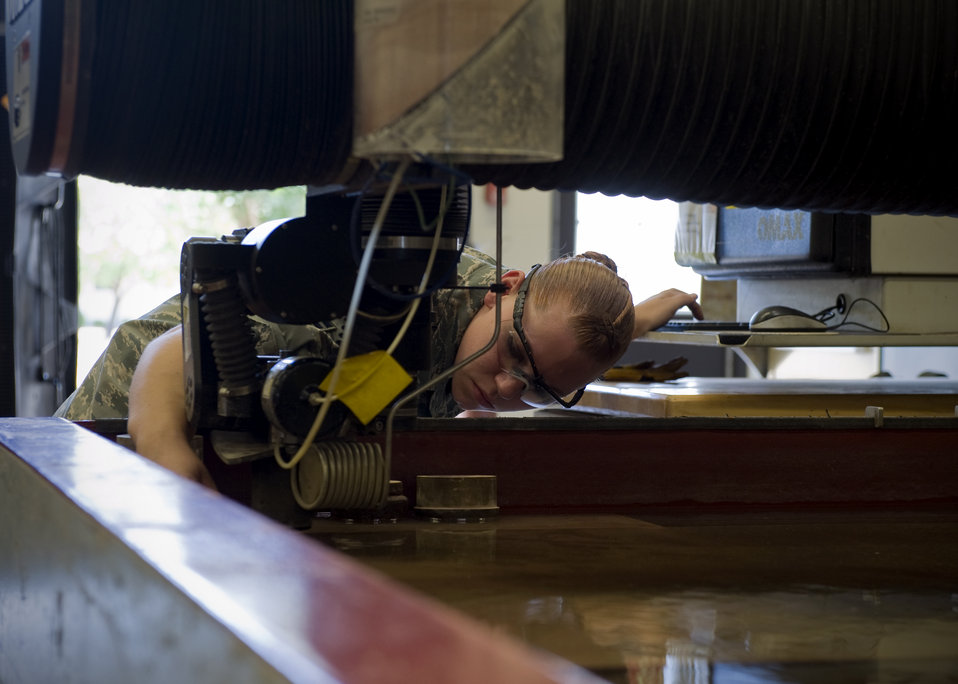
Heavy Metal Airman

Airman 1st Class Brooke Goosen, 7th Equipment Maintenance Squadron, positions an abrasive nozzle onto a sheet of metal Aug. 14, 2012, at Dyess Air Force Base, Texas. The cut metal will be welded onto a Y-stand used to hold munitions. Goosen is the only female out of 28 Airmen in the Dyess metal shop and has more than seven years experience with welding.